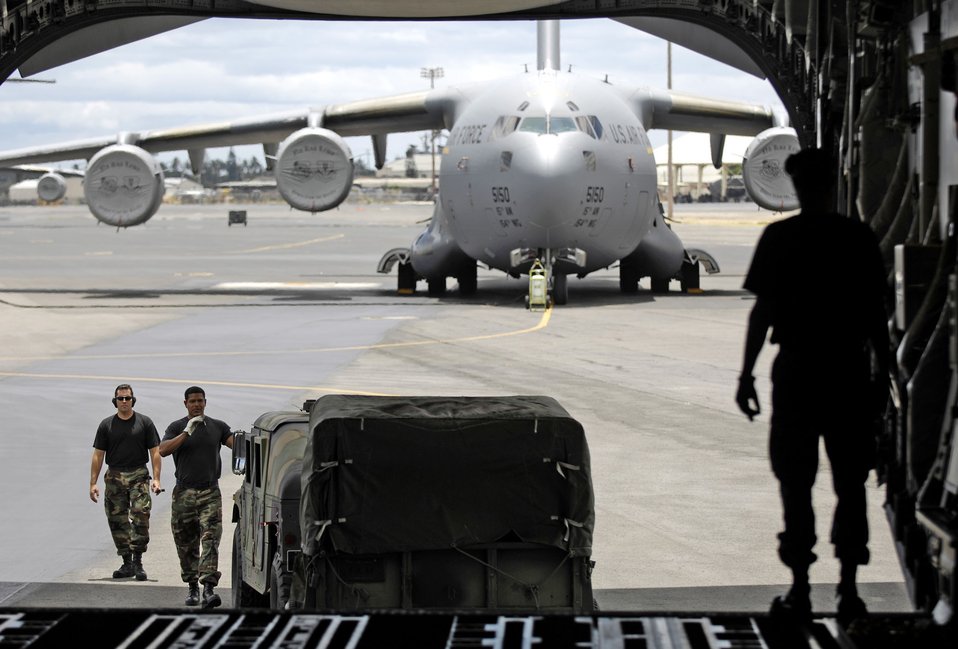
Hickam Rodeo team ready to go

Hickam Air Force Base, Hawaii, Rodeo team members guide a humvee onto a C-17 Globemaster III July 13. Members from the 535th Airlift Squadron and 15th Logistics Readiness Squadron Combat Mobility Element are practicing for upcoming Air Mobility Command Rodeo at McChord AFB, Wash.